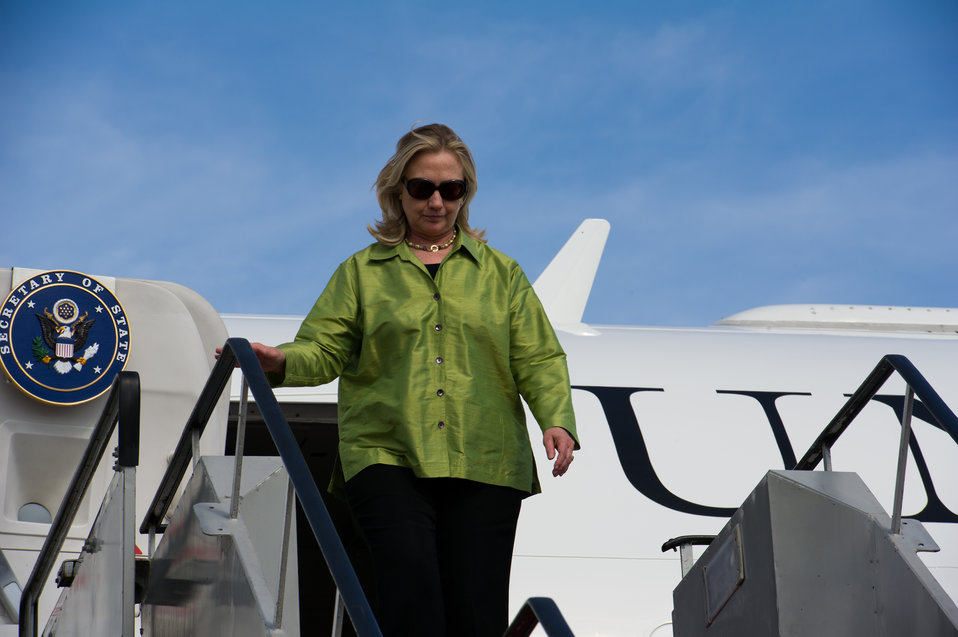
Secretary Clinton Arrives in Bali

U.S. Secretary of State Hillary Rodham Clinton arrives in Bali, Indonesia, for the ASEAN and East Asian Summits on November 17, 2011.